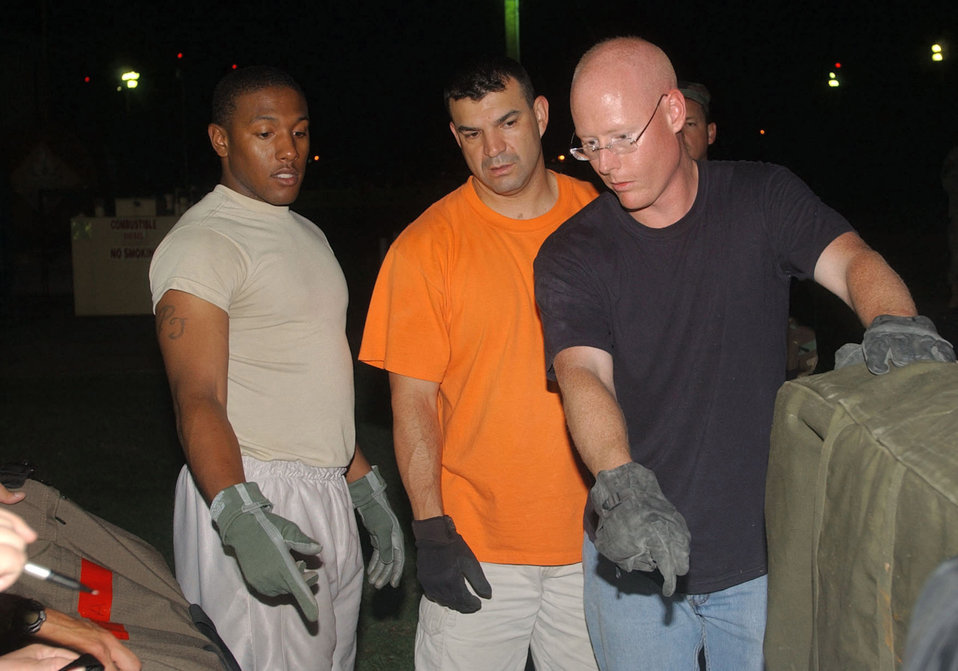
SOUTHCOM medics respond to Peru quake relief efforts

Army Sgt. Patrick Dickens (from left), Master Sgt. Alvaro Magana and Master Sgt. Dan Cockrell load supplies onto a pallet Aug. 16 at Soto Cano Air Base, Honduras, for the mobile surgical team's deployment to Peru to assist with earthquake relief efforts.